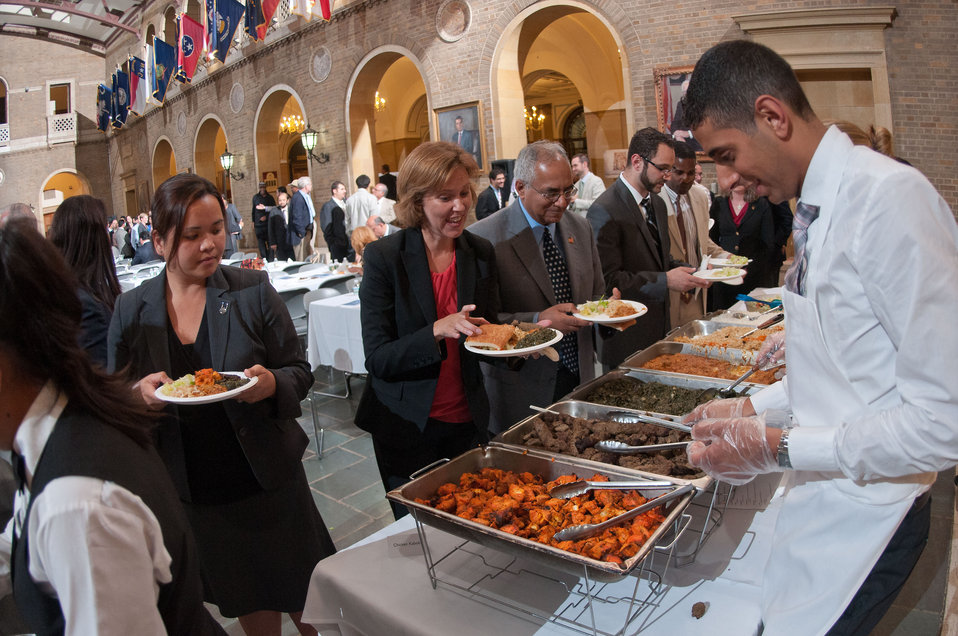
Agriculture Deputy Under Secretary for Farm and Foreign Agricultural Services Darci Vetter chose 'a little bit of everything' when the fast was broken at the Iftar event, co-sponsored by the Iftar celebration, co-sponsored by the U.S. Department of Agriculture, U.S. Agency for International Development (USAID) and Islamic Relief USA, on Tuesday, August 7, 2012, in the USDA Whitten Building, in Washington, D.C. Ramadan is the month of fasting, intensive prayer, sacrifice and worship for Muslims around the world. Throughout this month, Muslims fast during the day, abstaining from consuming food from dawn to dusk and using this time to purify spiritually. Fasting reminds Muslims of the poverty and hunger suffered by many in the United States and worldwide. It is a connection with those who are hungry not through devotion, but through the many global factors that lead to hunger and famine. Iftar is the meal at which Muslims break their fast at sunset, usually by eating dates, according to the Prophetic tradition.